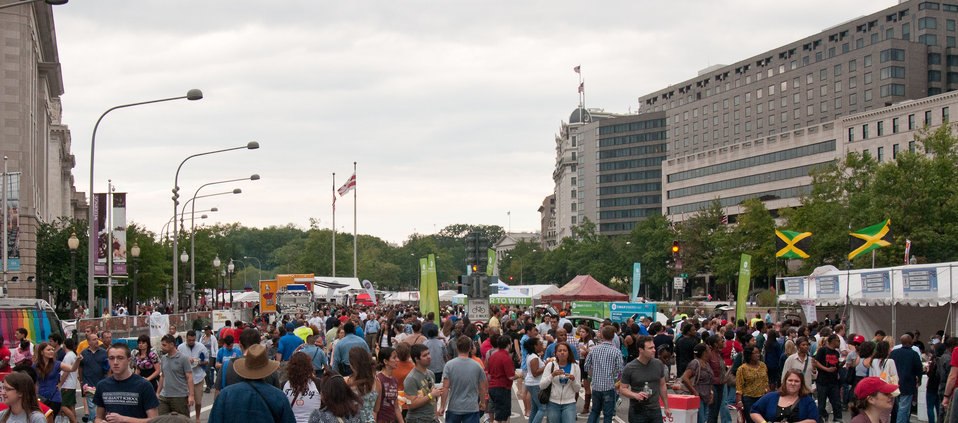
The Taste of D.C., event highlights more than 70 eateries, 30 specialty beer providers, the United Service Organization (USO) Metropolitan Washington, and live bands. It is anticipated that more than 500,000 people will attend over the course of the three-day event, which extends from the White House to the Capitol, along Pennsylvania Ave. in Washington D.C. on Saturday, October 6, 2012. Agriculture Food Safety and Inspection Service specialists present talks and cooking demonstrations. Agriculture’s mobile Discovery Zone is on hand to educate children and parents about the four main principals of food safety – clean, separate, cook and chill.